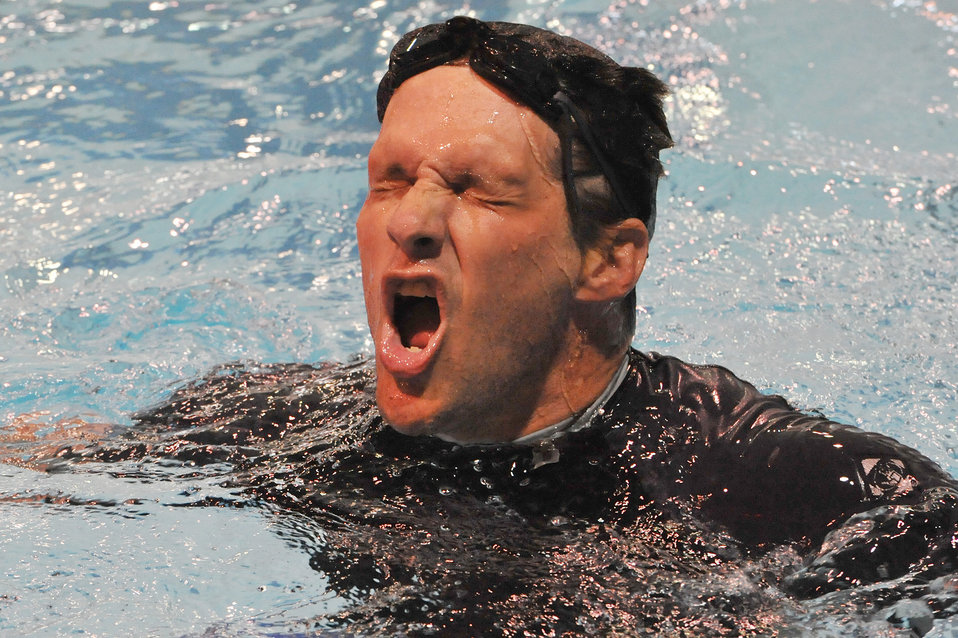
Air Force makes splash

Jason M. Morgan competes in a swimming competition May 18, 2011, during the 2011 Warrior Games at the U.S. Olympic Training Center in Colorado Springs, Colo. More than 200 wounded warriors from all the military services are competing in paralympic-style athletic events May 16 through 21.